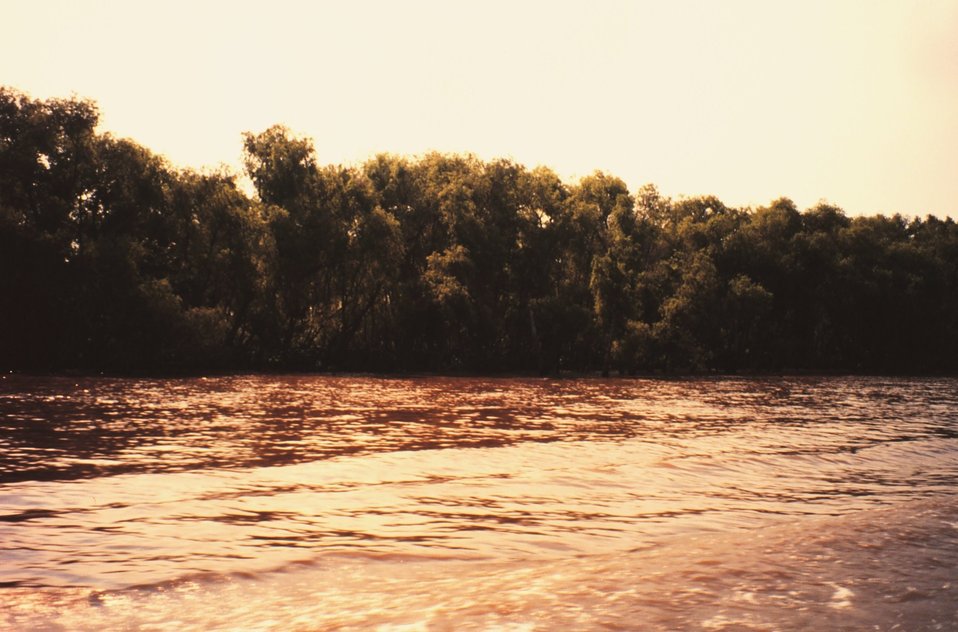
Mississippi River levee viewed from river